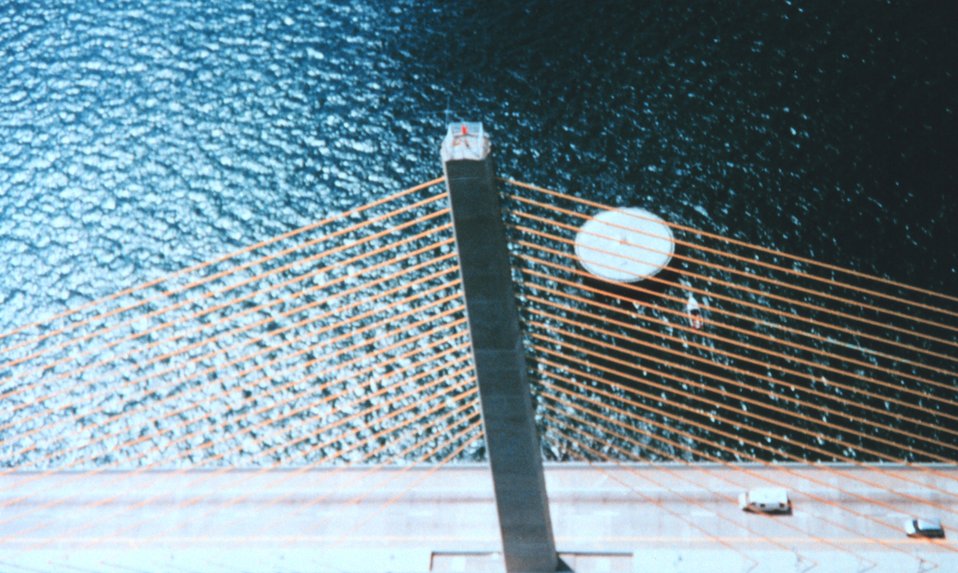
Sunshine Skyway Bridge at Tampa Bay